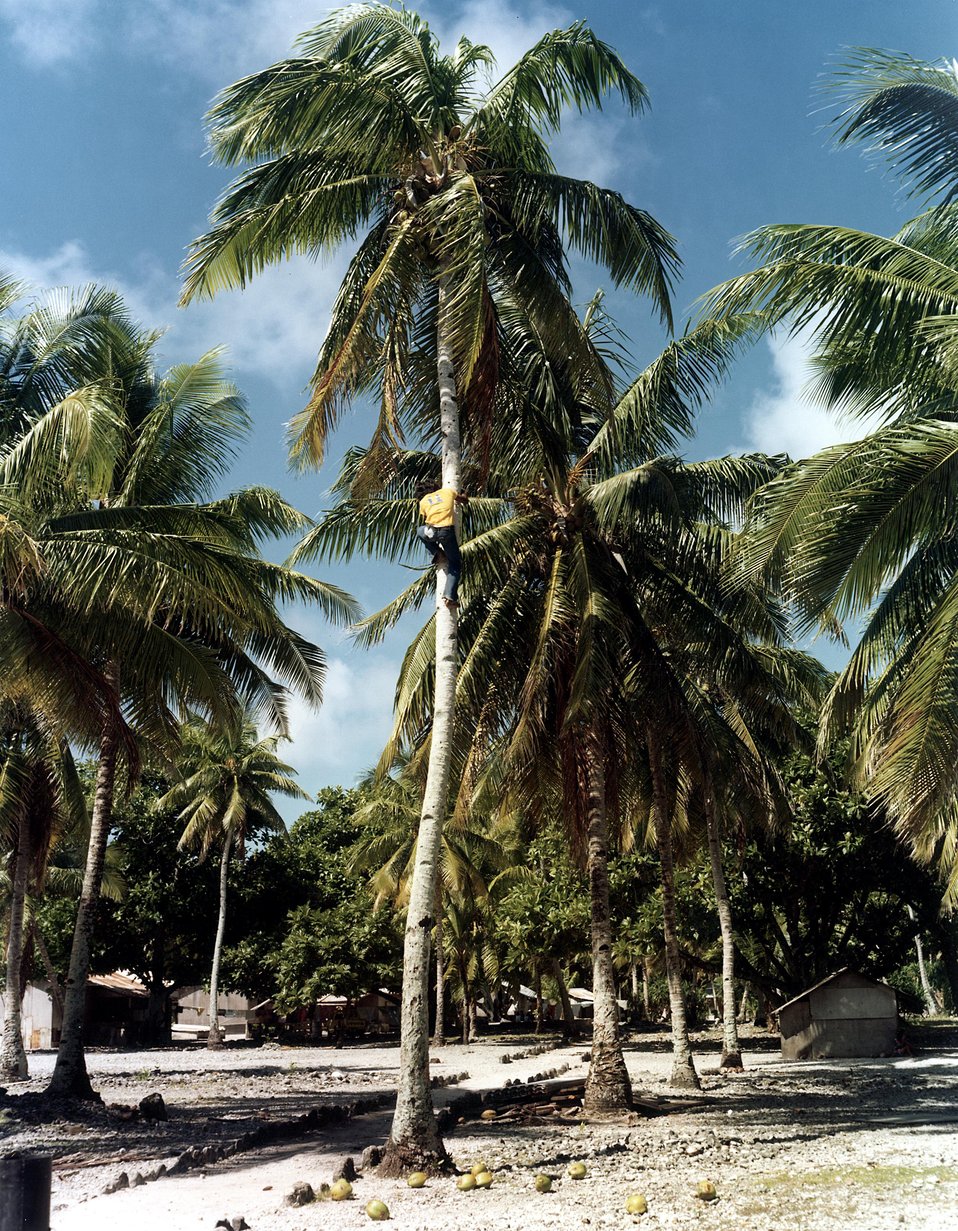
Brunswick Steam Electric Plant site crawler tractors on the barge preparing to move the reactor pressure vessel from the intake canal unloading site to the plant itself.